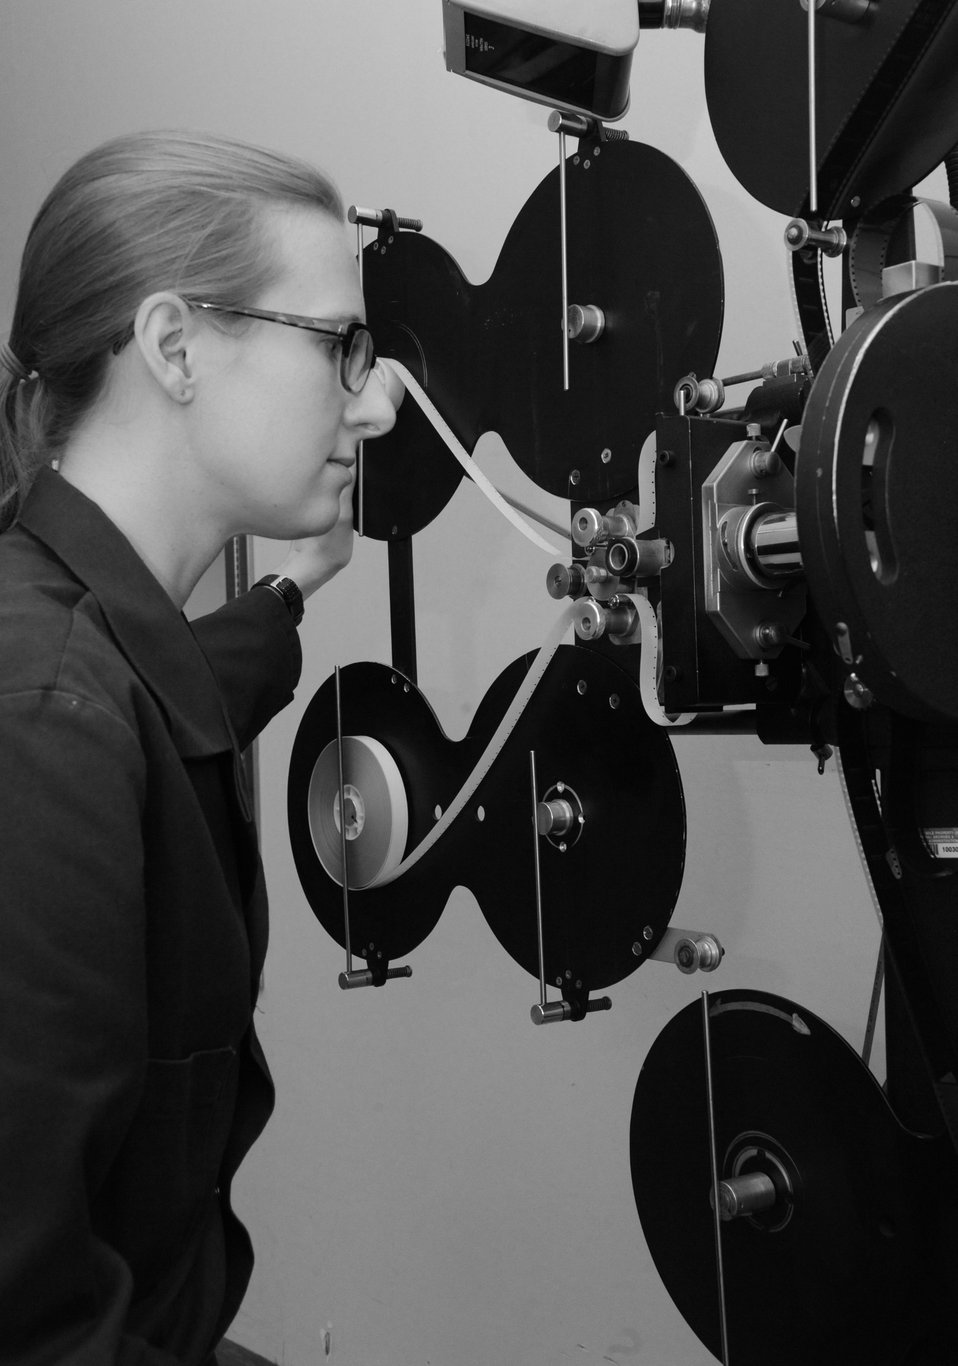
One of a series of recreations of photos of the Depue printer from 1952.; Location: Archives 2 - Motion Picture Preservation Lab, College Park, MD